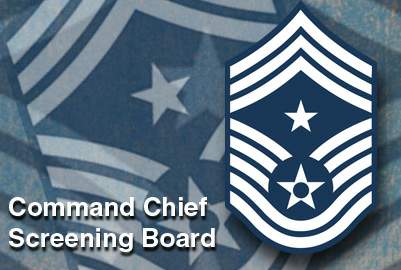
Command chief master sergeant screening board convenes

The command chief master sergeant screening board for calendar year 2009 recently selected 200 candidates out of a field of 740 eligible chief master sergeants to fill 80 expected requirements.